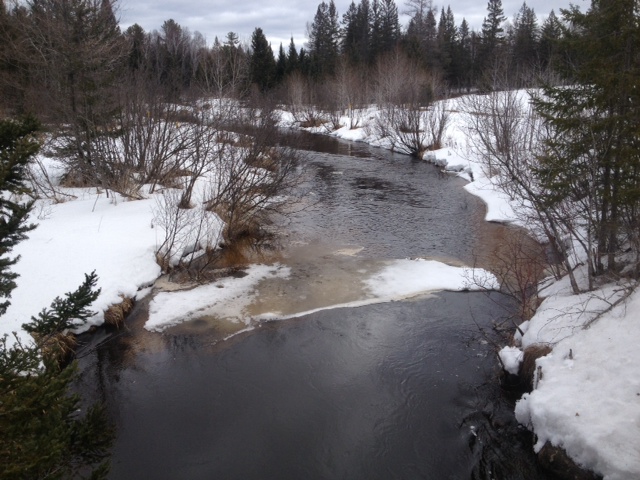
The North Branch of the Ford River, Dickinson County, Michigan.